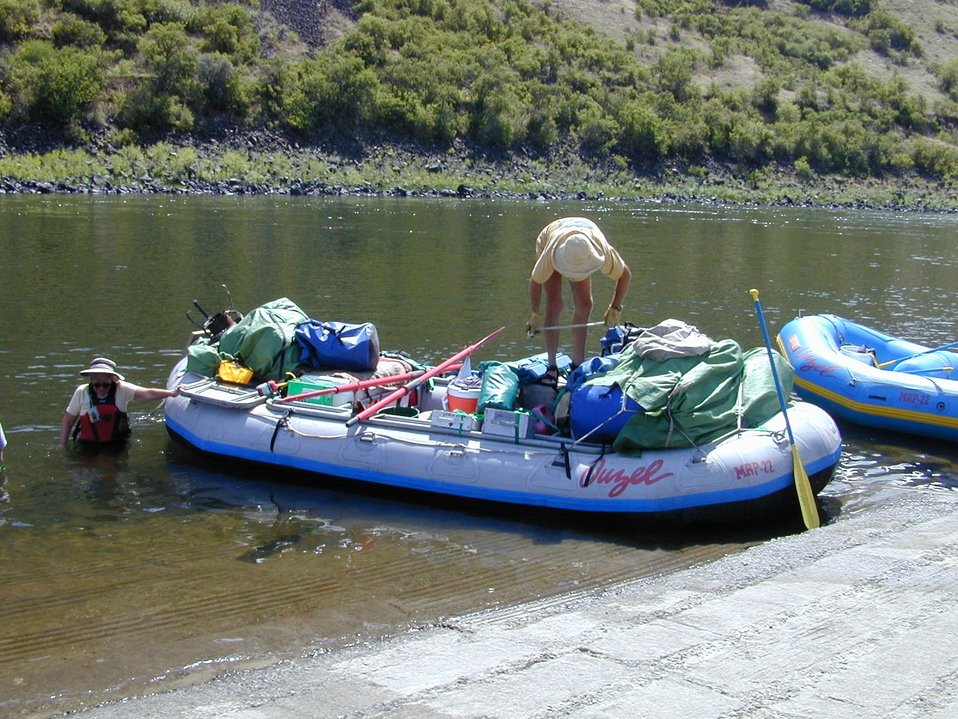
Recreation Rafting on Lower Salmon River Cottonwood Field Office UCSC Upper Columbia Salmon Clearwater District